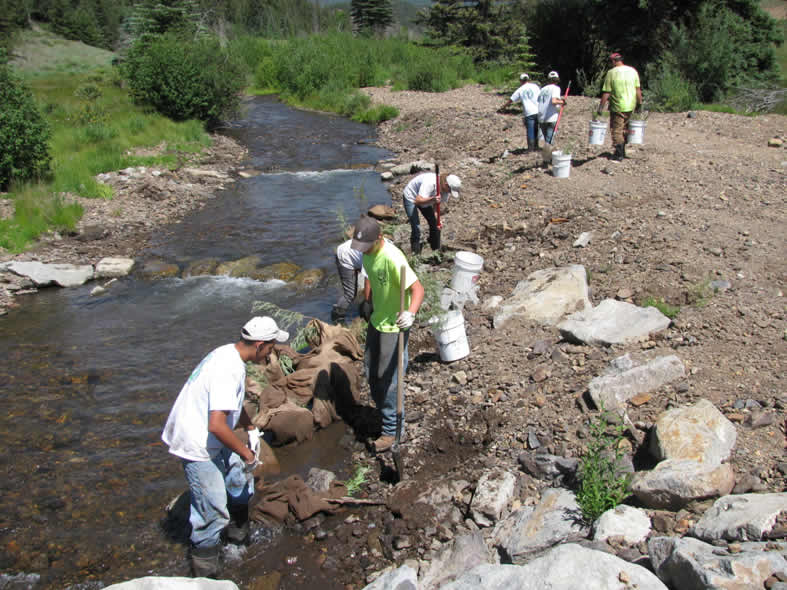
Youth Conservation Corps Work on Kerber Creek

San Luis Valley National Wildlife Refuge Complex Youth Conservation Corps (YCC) crew members work on the Kerber Creek Restoration Project, aimed to restore over 20 miles of stream and 1,000 acres of floodplain. YCC crews were used to transplant vegetation and repair eroding banks.